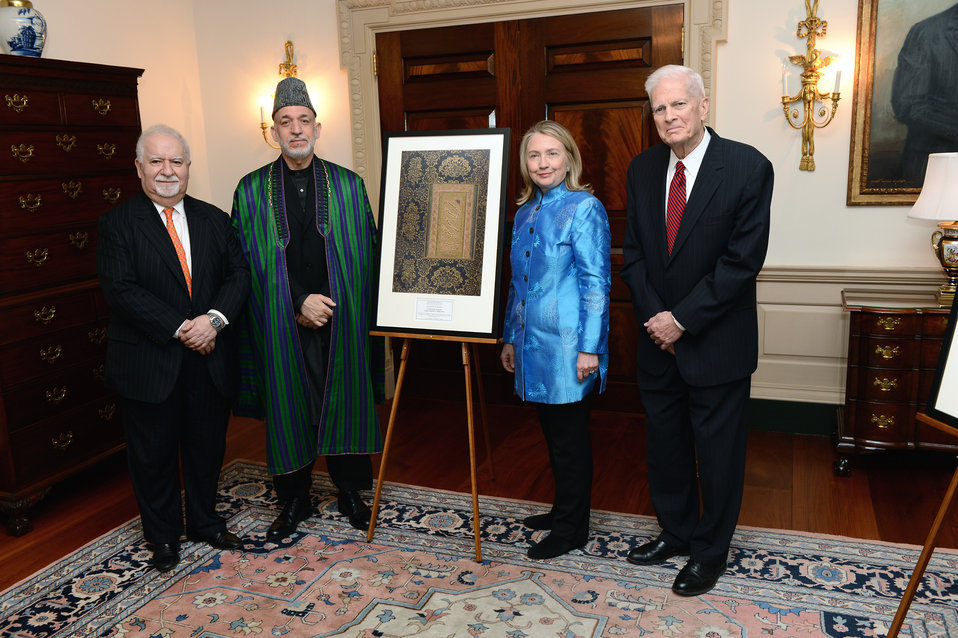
Secretary Clinton Participates in Library of Congress Presentation to the Government of Afghanistan

Dr. Vartan Gregorian of the Carnegie Corporation of New York, Afghan President Hamid Karzai, U.S. Secretary of State Hillary Rodham Clinton, and Dr. James H. Billington of the Library of Congress pose for a photograph at the announcement of a gift to the Afghan people from the U.S. Library of Congress and the Carnegie Corporation of New York – a digital copy of the entire body of Afghanistan-related works at the library, as well as a framed copy of a rare manuscript from the collection on display at the U.S. Department of State in Washington, D.C., January 10, 2013.